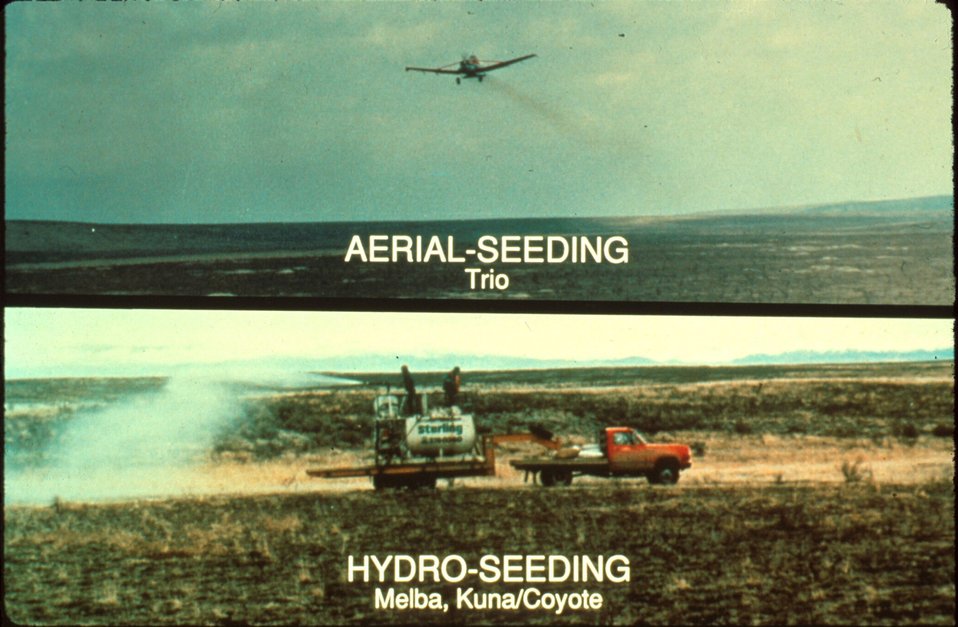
Aerial seeding Hydro Seeding Range Restoration Project